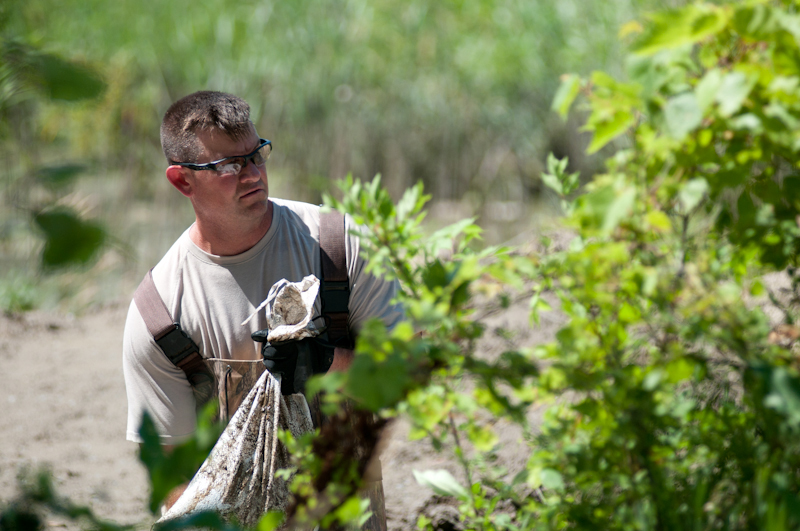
Air Guardsmen fight flood

An Airman from the Missouri Air National Guard's 139th Airlift Wing in St. Joseph, Mo., prepares to hand off a sandbag to a fellow Airman June 30, 2011, in an effort to fight rising flood waters near Elwood, Kan.